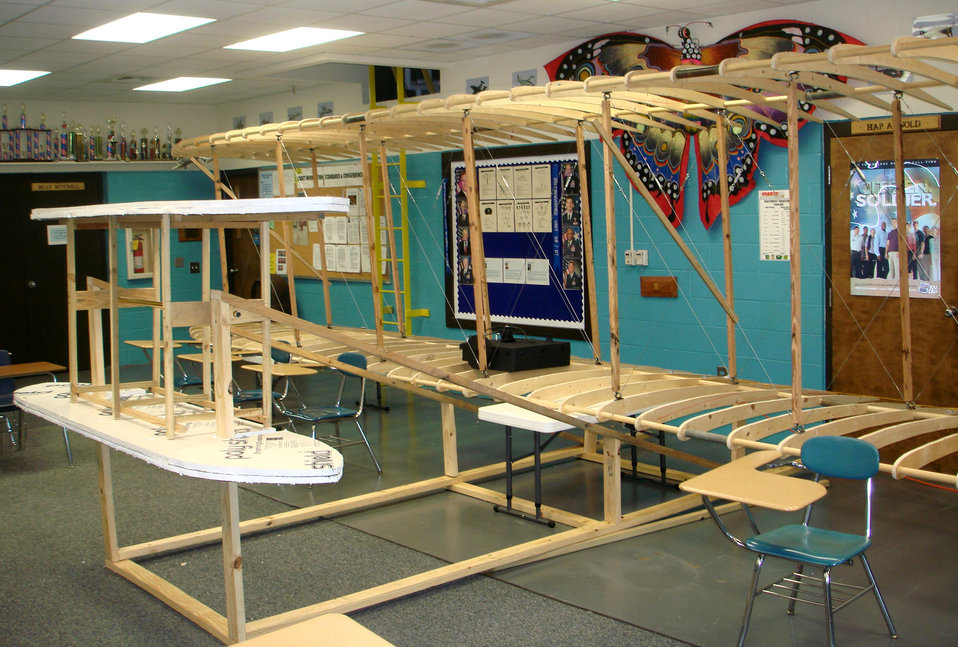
Junior ROTC cadets revisit history, build Wright Flyer replica

More than 240 cadets from SouthWest Edgecombe High School, N.C., Air Force Junior ROTC Detachment NC-945 built a replica of the Wright Flyer after visiting the Wright Brothers' memorial in Kitty Hawk, N.C. The Wright Flyer replica spans the original dimensions of 18 feet by 40 feet and was displayed in three community parades upon completion in December 2008.